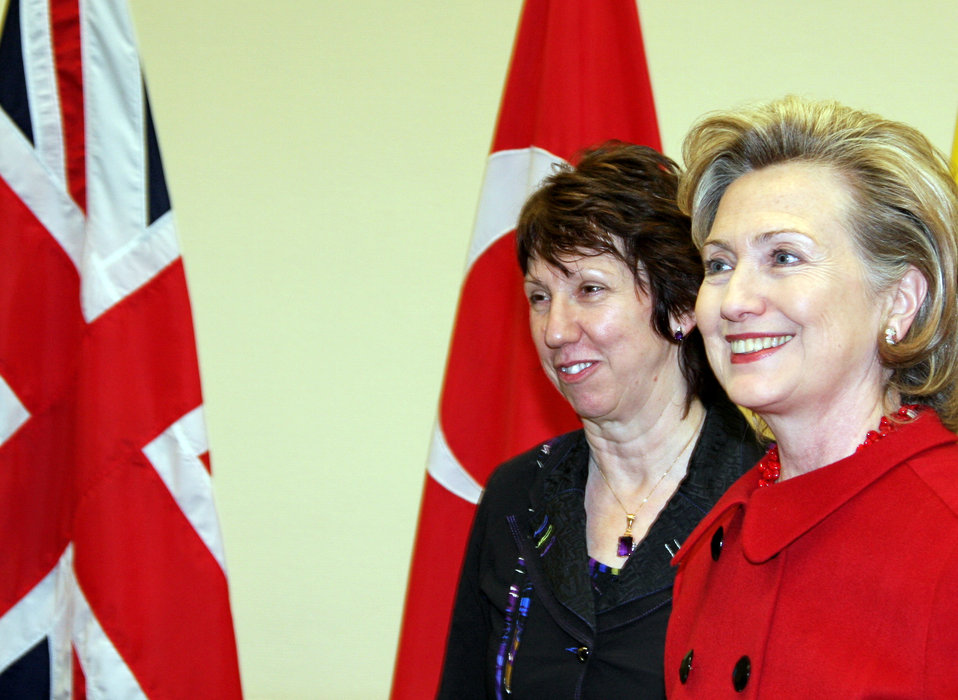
Secretary Clinton Meets With EU High Representative for Foreign Affairs and Security Policy

U.S. Secretary of State Hillary Rodham Clinton holds a press conference at NATO headquarters in Brussels, Belgium December 4, 2009.